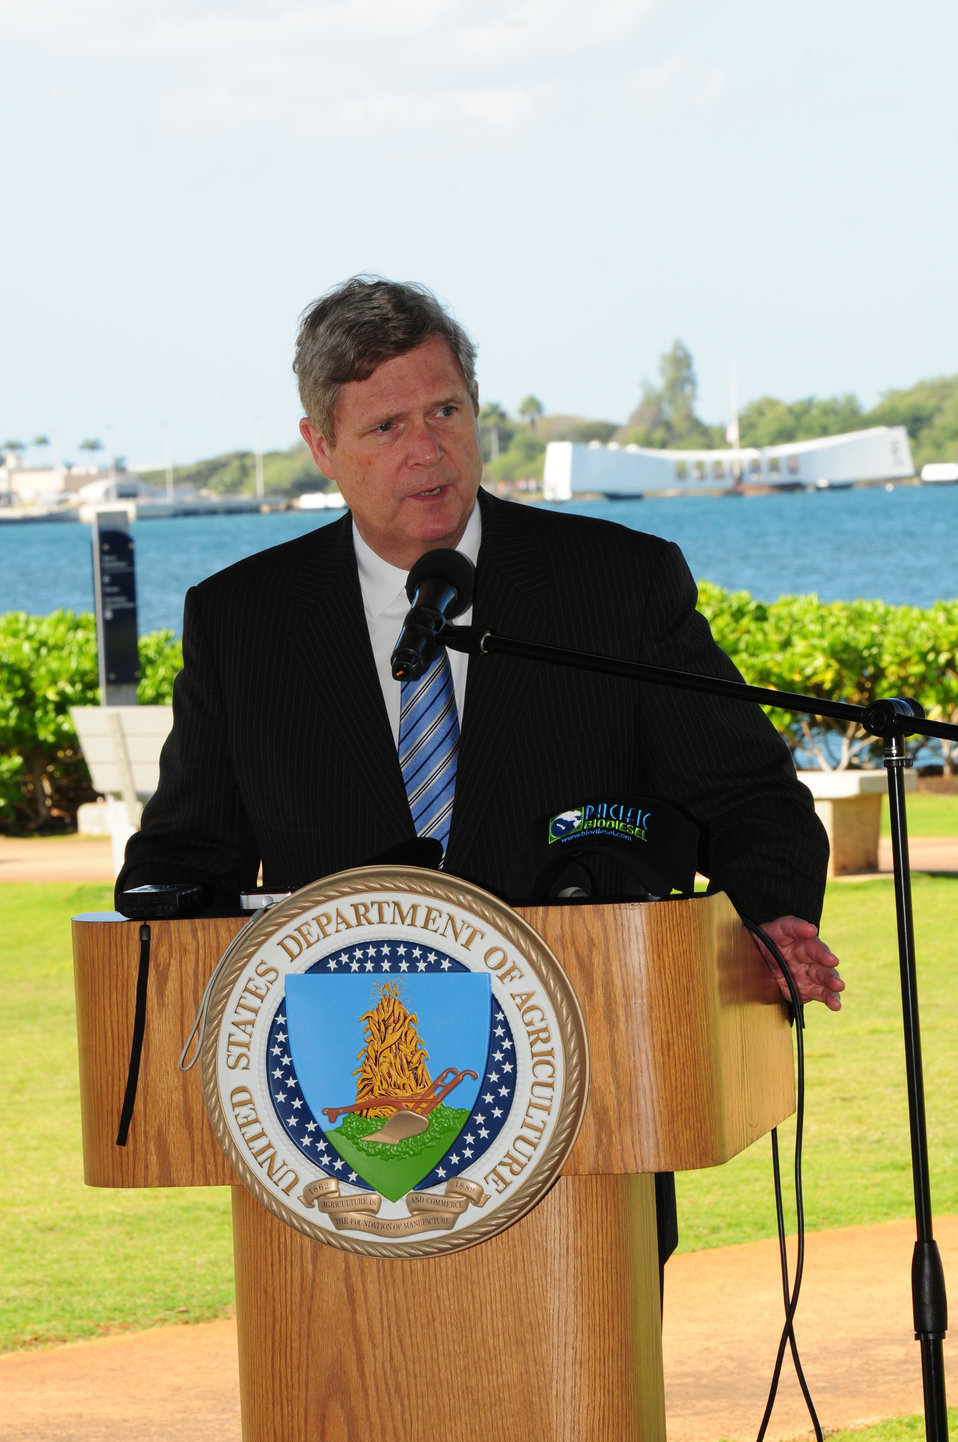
Agriculture Secretary Tom Vilsack highlights the Obama Administration's commitment to renewable energy at the.World War II Valor in the Pacific National Monument's Pearl Harbor Visitor Center. Pearl Harbor naval base was the first Hawaii military marine fleet to use biodiesel, replacing the Department of Navy-operated tour boats that shuttled visitors to and from the USS Arizona Memorial with five new boats capable of running on 100% biodiesel. Near Honolulu, HI, on Tuesday, January 10, 2012.